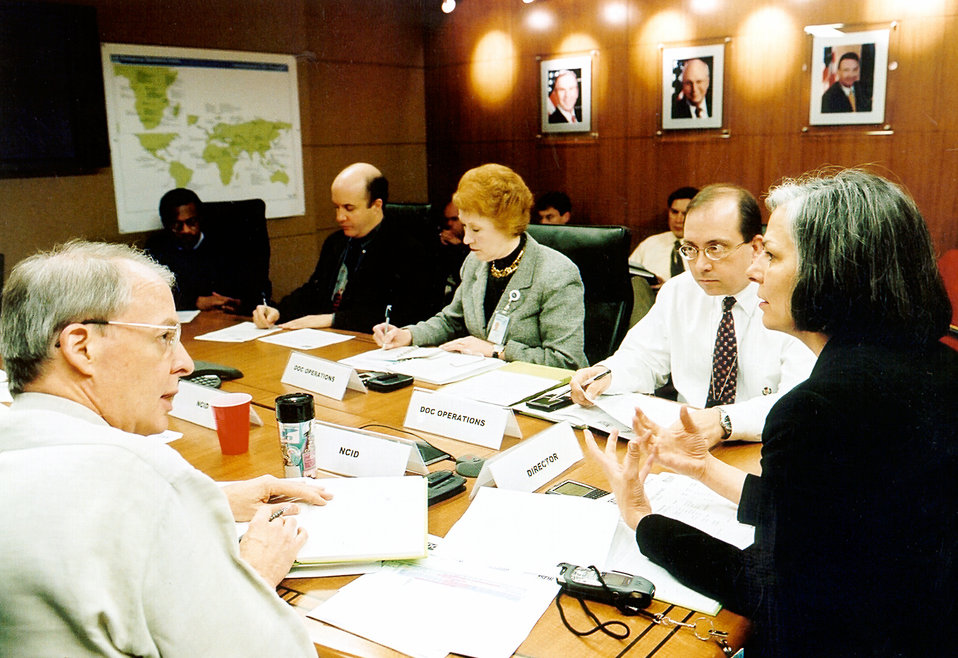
These CDC officials are meeting inside the conference room of the CDC's new Emergency Operations Center (EOC).